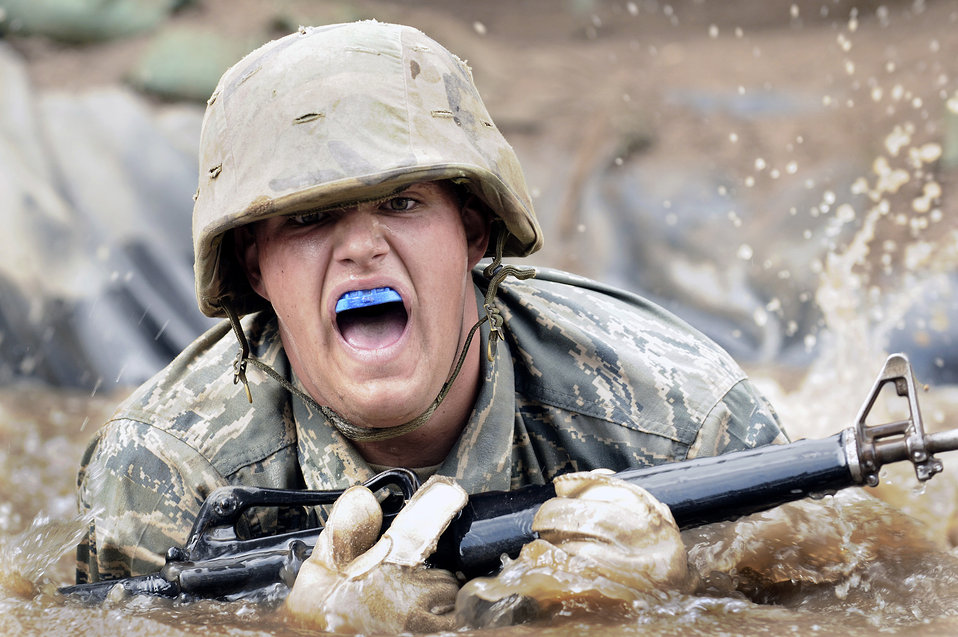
Academy basic field training at Jacks Valley

Air Force Academy Basic Cadet Nicholas Tilton crawls through the water obstacle shouting encouragement July 21 on the Jacks Valley Assault Course near Colorado Springs, Colo. The fall academic semester begins Aug. 6.